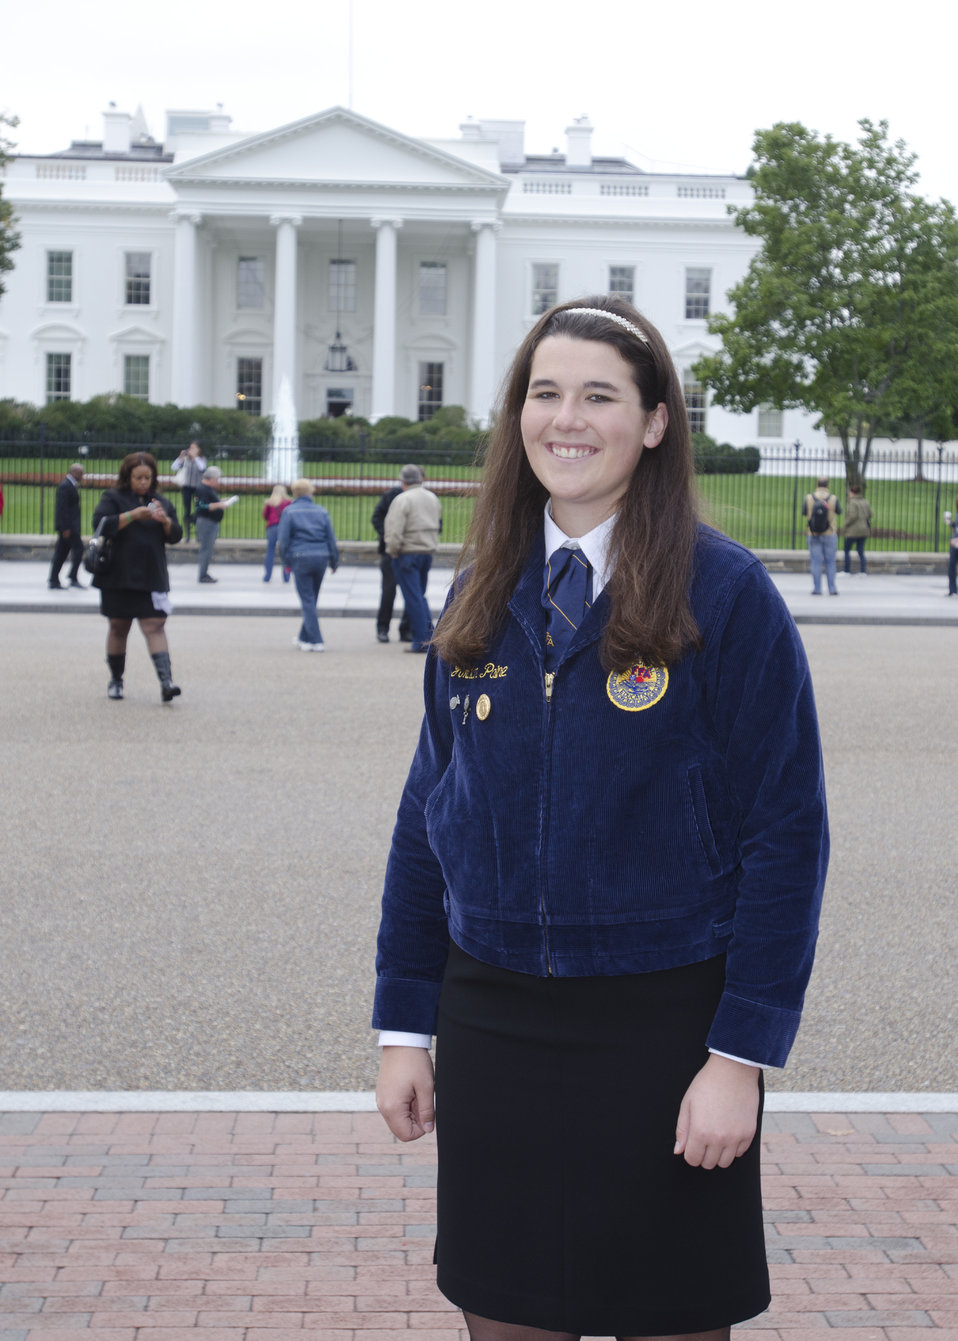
Champion of Change recipient Jordan Paine in front of the White House in Washington, D.C. on Oct. 9, 2012. Paine is the President of the Southern Valley FFA Chapter and the Oxford Jr. Feeders 4-H Club in Oxford, NE and serves on Nebraska’s Youth Curriculum Committee that helps to produce 4-H Curriculum, and is on her county’s 4-H Council. Paine has grown up in agriculture and has been key in implementing many agricultural education programs in her county. Her work includes starting a school farm, an FFA goatherd, a youth bucket-calf program, reviewing and writing curriculum, and is currently working on building a greenhouse at her school. Paine has also represented Nebraska FFA at the World Food Prize Global Youth Institute.